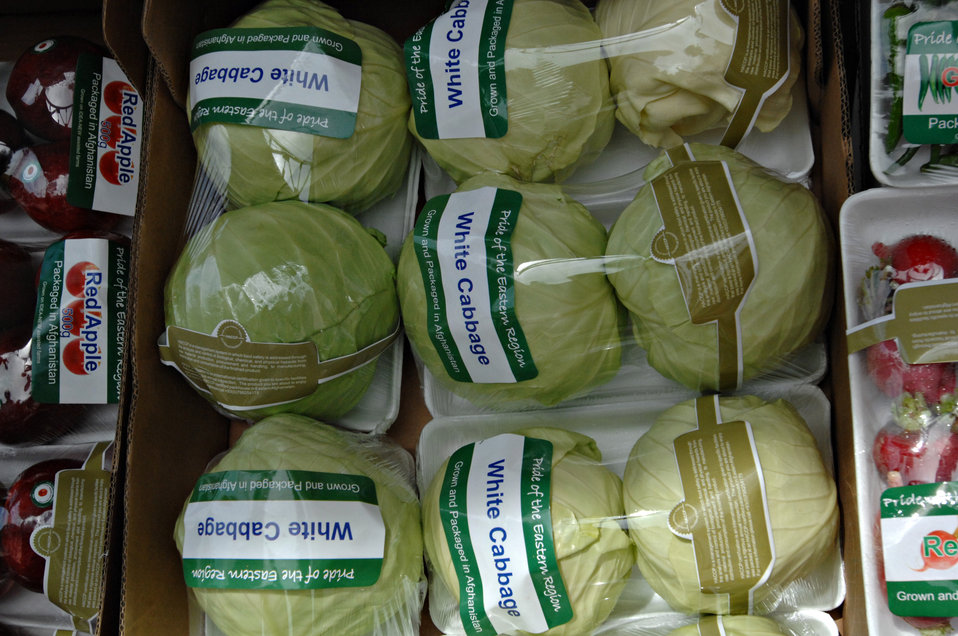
110209sv Shah289

Vegetables on display at the Surkh Rod vegetable packing facility in Surkh Rod, Nangarhar Province, on Wednesday, February 9, 2011. (S.K. Vemmer/Department of State)